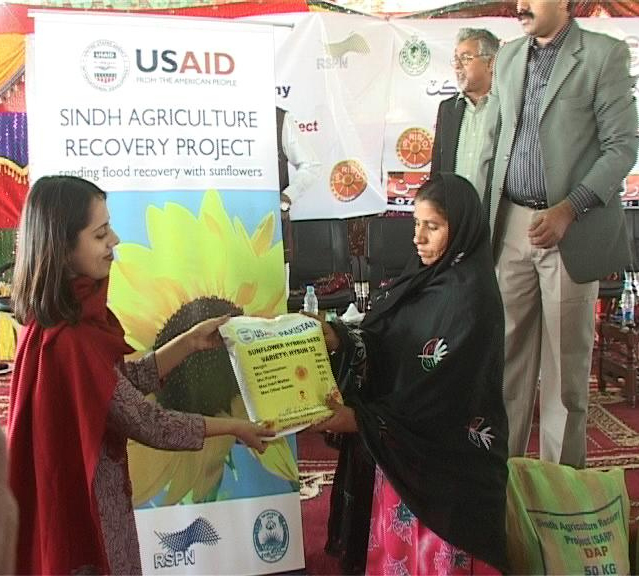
U.S. Assists Agriculture Recovery In Sindh

December 20, 2010 - USAID representative Sarah Parvez hands out seeds and fertilizer to farmers at a ceremony in Madad Pur Khoso Village. This ceremony launched a $15 million USAID project in Sindh province.